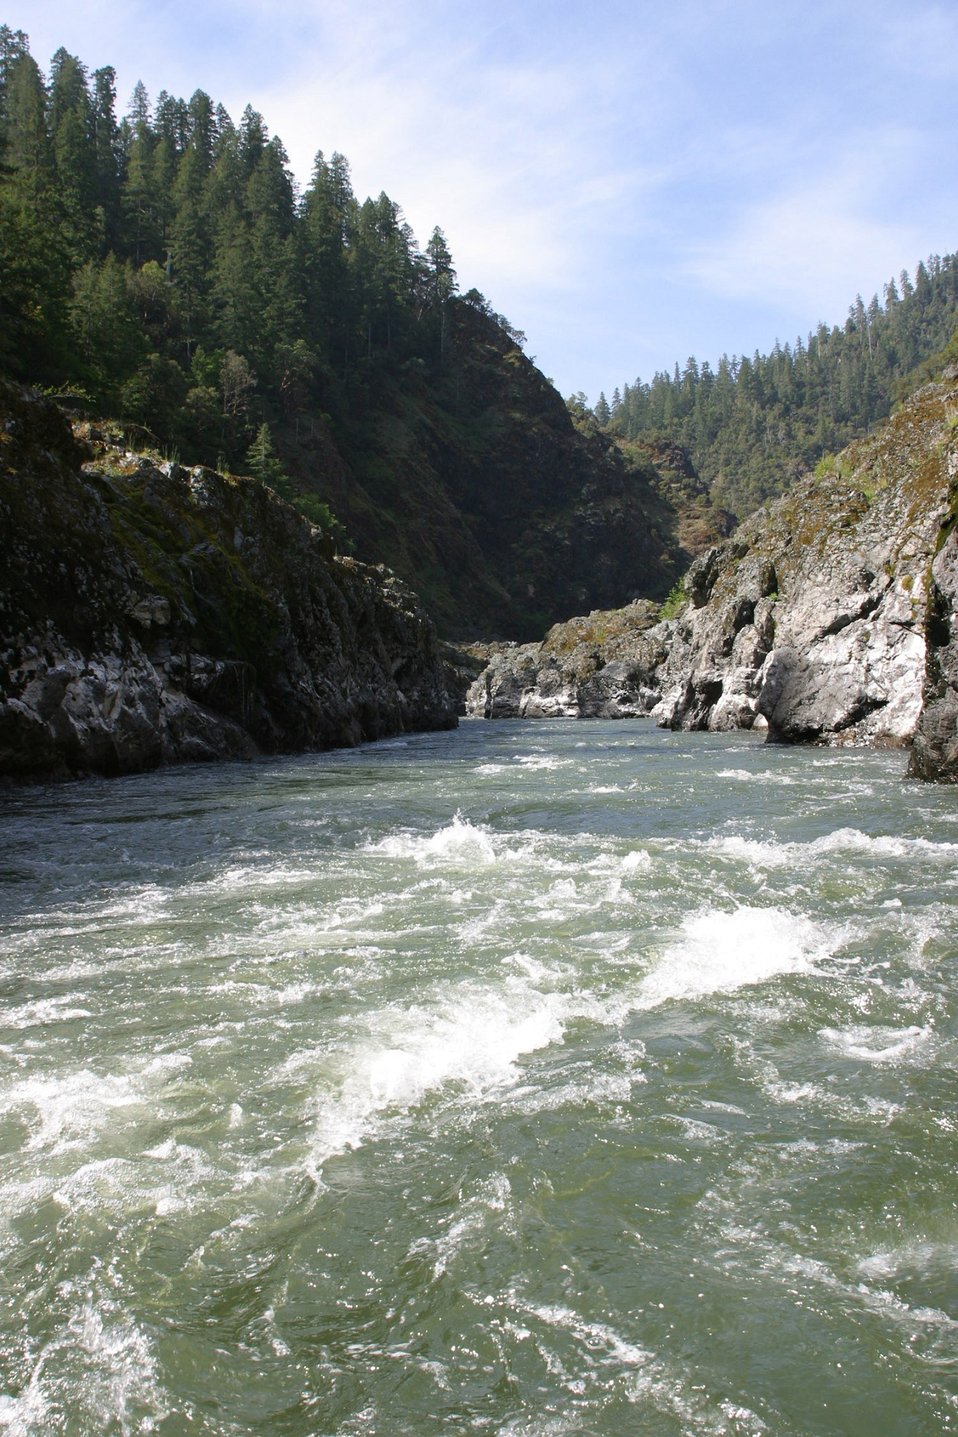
Wild section of the Rogue River from Grave Creek to Foster Bar May 19 to May 22.